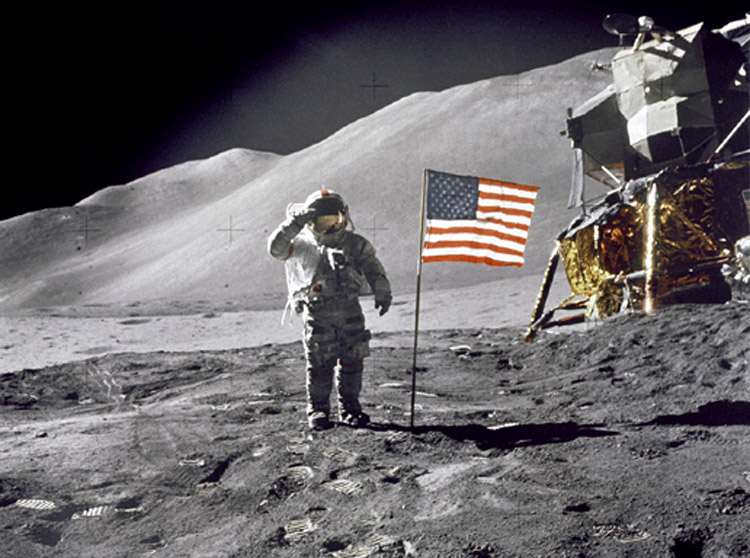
NASA recruiting volunteers

Air Force astronaut David R. Scott salutes the flag during Apollo 15 mission. Only 12 humans have walked on the moon, and NASA is currently looking for astronaut candidates who will have the opportunity to build a base there.